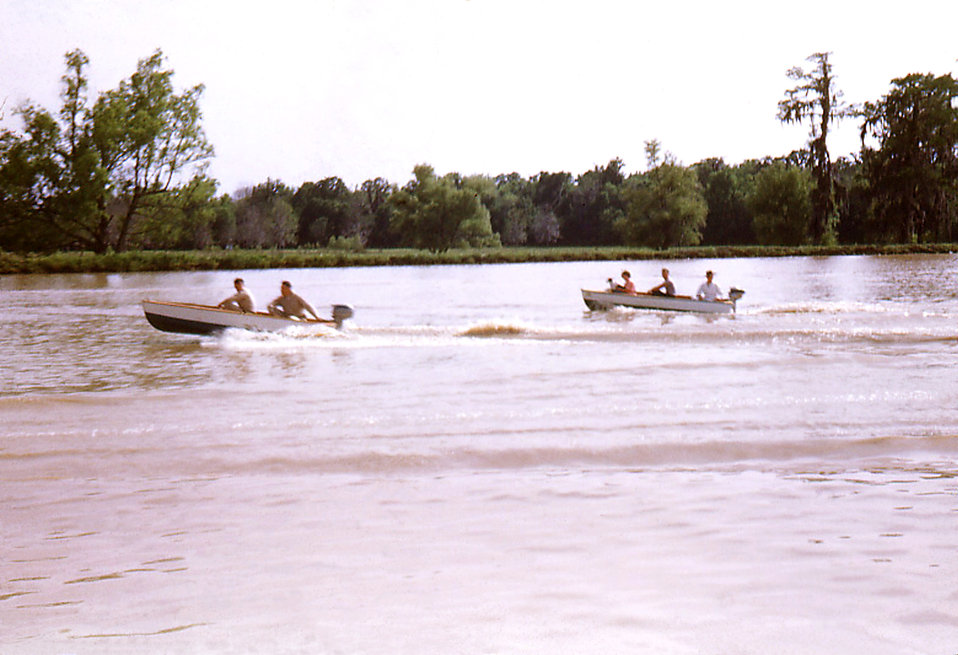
This historic image depicted a number of Carville, Louisiana Leprosarium patients as they were enjoying their usual Sunday outdoors, boating on Lake Johansen. Lake Johansen was named after one of the Leprosarium's Chief Medical Offiicers, Dr. Frederick A. Johansen. Being that the patients were for the most part quarantined, and therefore, sequestered from the surrounding society, participation in outdoor activities such as these boating activities, were well attended, and enjoyed by all.